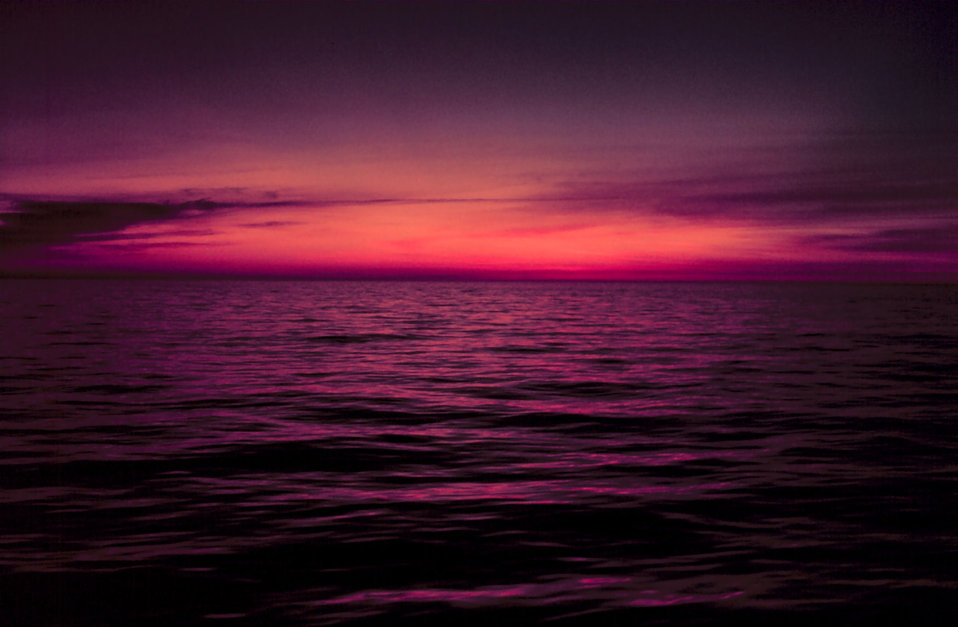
Remains of a sunset over the ocean at the onset of twilight.